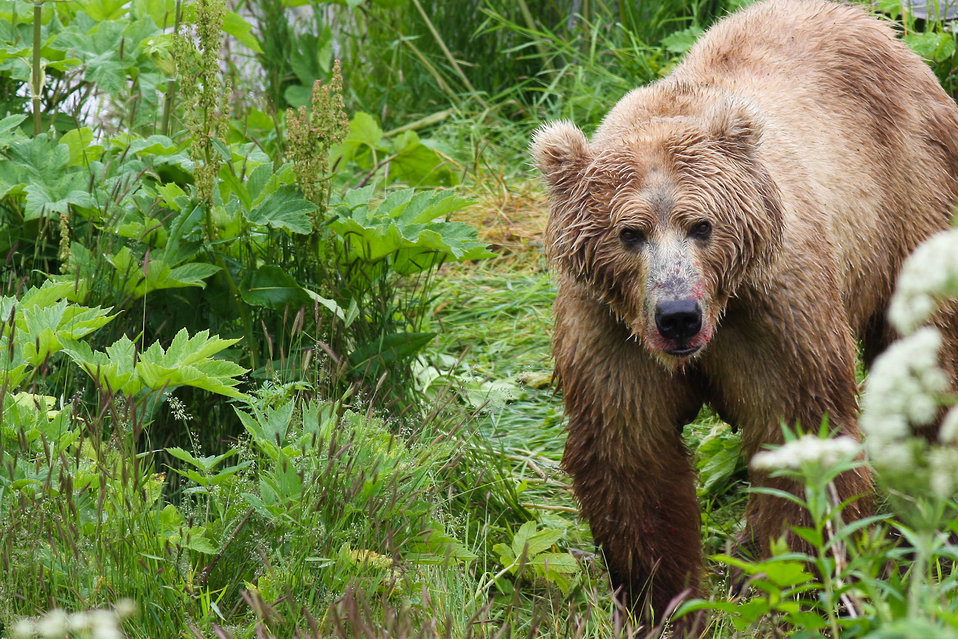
Kodiak brown bear dining on fresh salmon

Lisa Hupp/USFWS